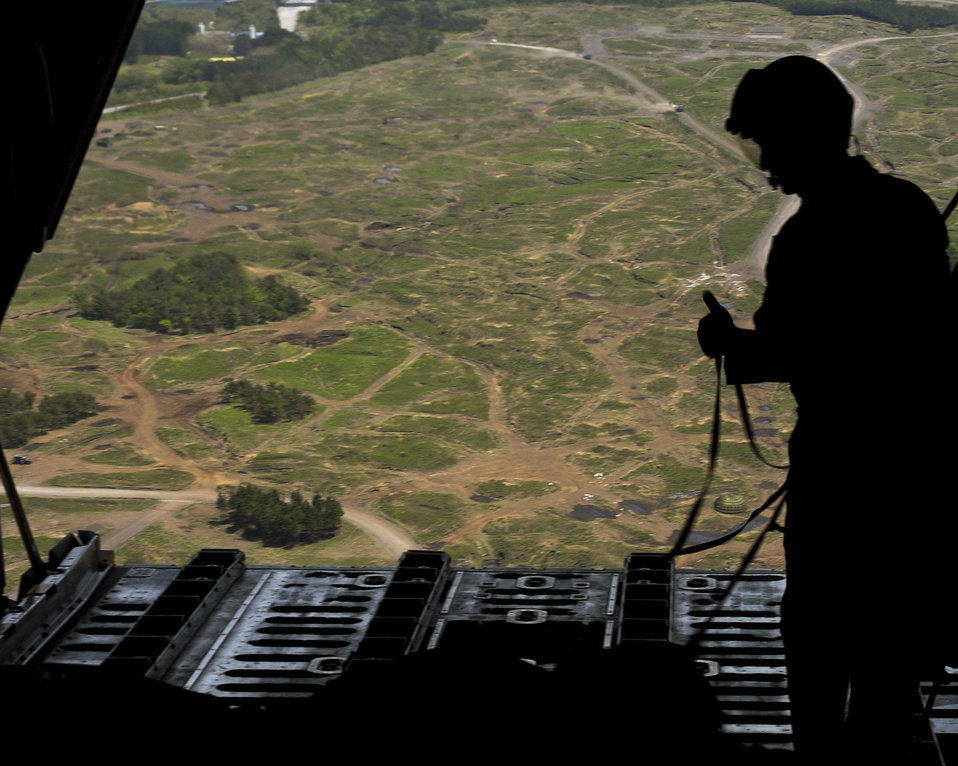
JAI Training

A loadmaster from the 374th Operations Support Squadron gives the OK during the bilateral Joint Air Delivery Inspection training May 6, 2010, at Yokota Air Base, Japan. The JAI event was a way for Japan Air Self Defense Force airmen to learn how loads are inspected and delivered in preparation for Red Flag-Alaska.